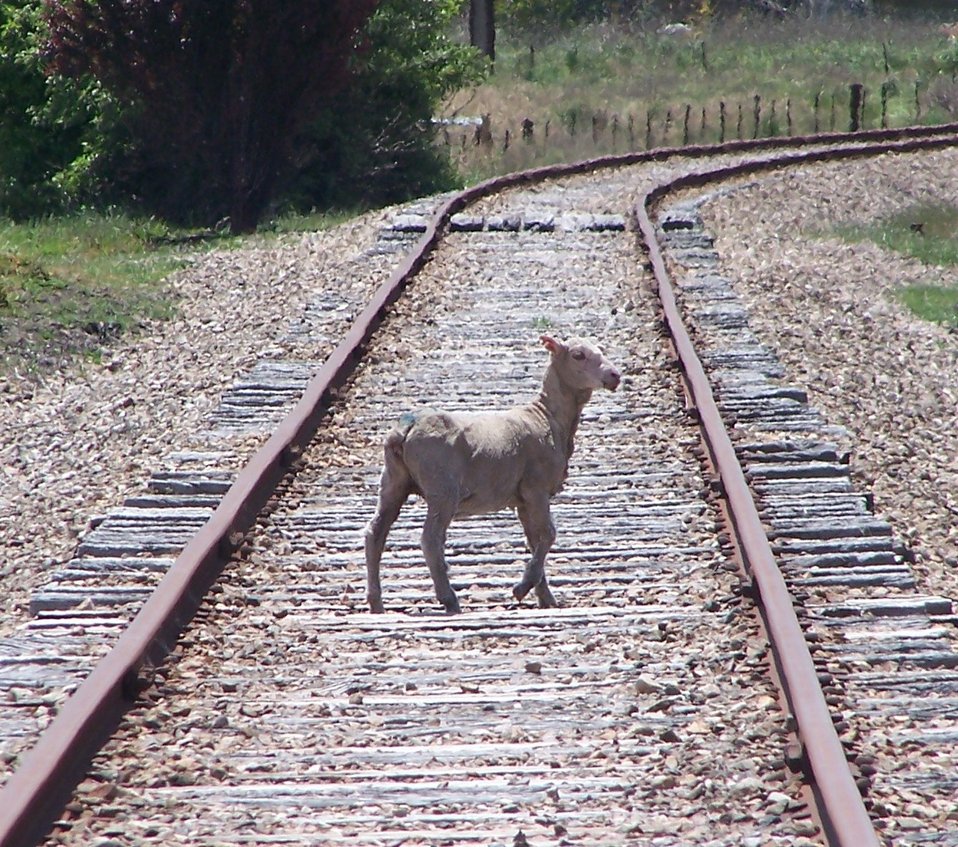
I was wantering along a railway track when I saw a sheep that had wandered off, and took a photo. Yet more proof that a sheeps will in life is to die. Note also the heat waves distorting the background of the image.